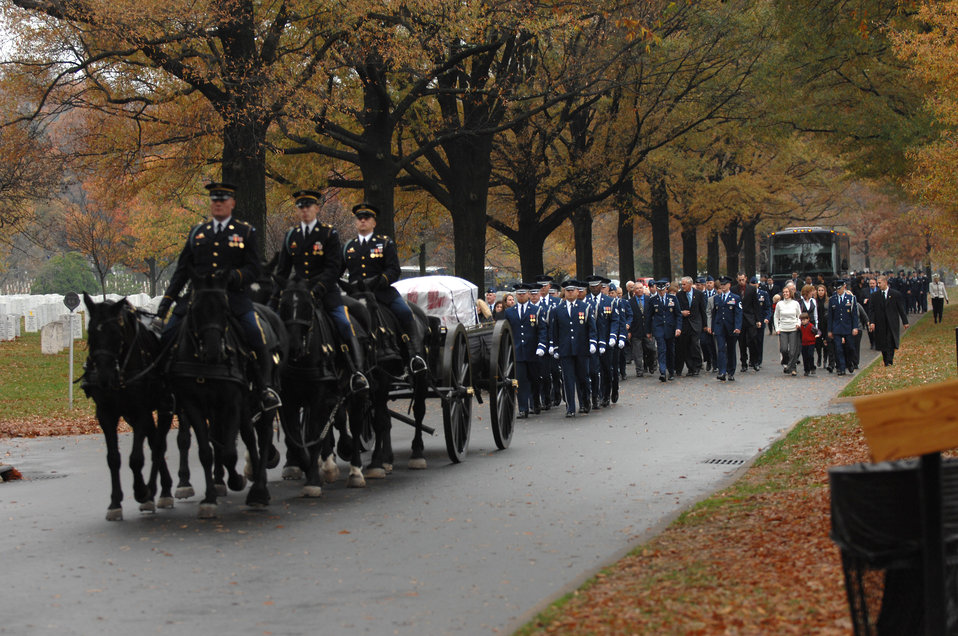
Remains of B-52 aircrew laid to rest at Arlington

A full funeral procession marches for a group burial ceremony for six fallen crewmembers of a B-52 Stratofortress that crashed July 21 off Guam's Northwest coast Nov. 14 at Arlington National Cemetery in Virginia. Five of the crew members were stationed at Barksdale Air Force Base, La., deployed to Guam with the 20th Expeditionary Bomb Squadron as part of the Defense Department's continuous bomber presence mission in the Pacific. The sixth crewmember was the deputy commander of 36th Medical Group at Andersen AFB, Guam.